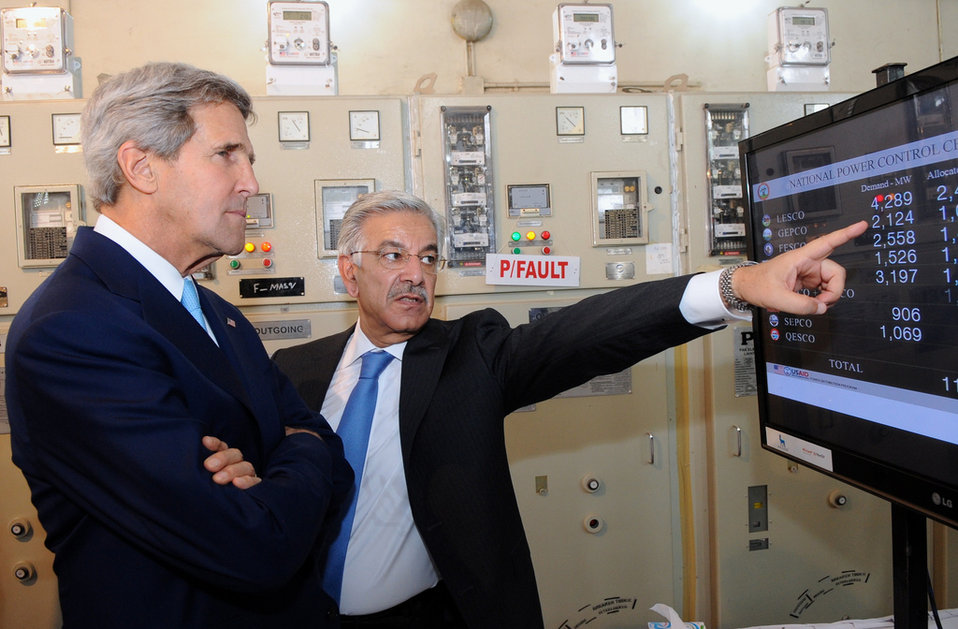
Secretary Kerry Receives a USAID Power Program Briefing

With USAID power meters above them, Pakistani Minister of Power and Water Khawaja Asif explains to U.S. Secretary of State in Islamabad on August 1, 2013, how the equipment saves power for utilities and the government.